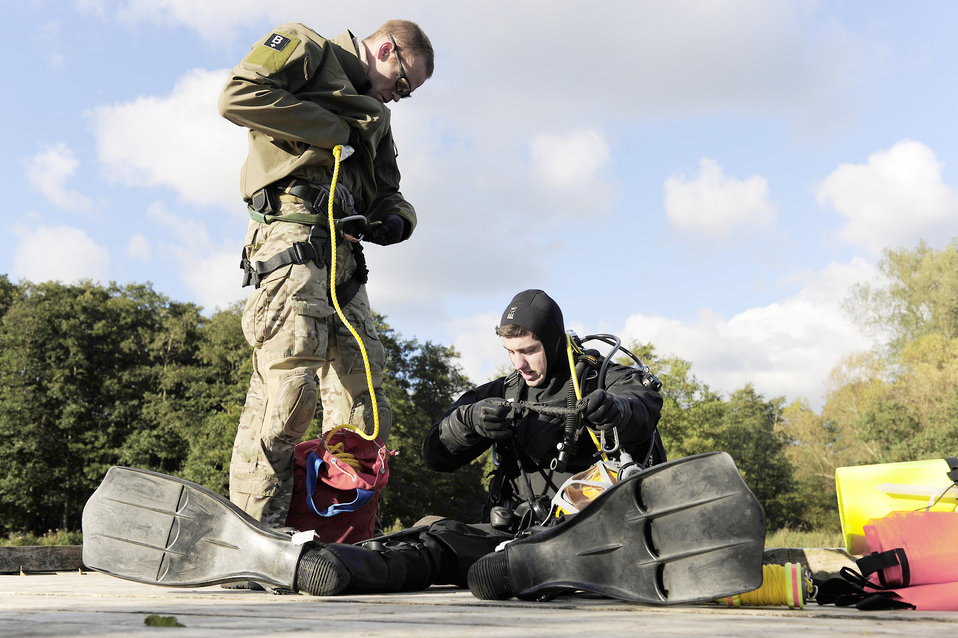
Subsurface recovery exercise

Senior Airman Nathan Simonson attaches a tagline to Senior Airman Eli Reynolds in preparation for entering the water to conduct subsurface recovery exercise Oct. 20, 2010, at Stanford Training Area, England. The tagline is used to communicate between persons using line-pull signals. Both Airmen are pararescuemen with the 56th Rescue Squadron.